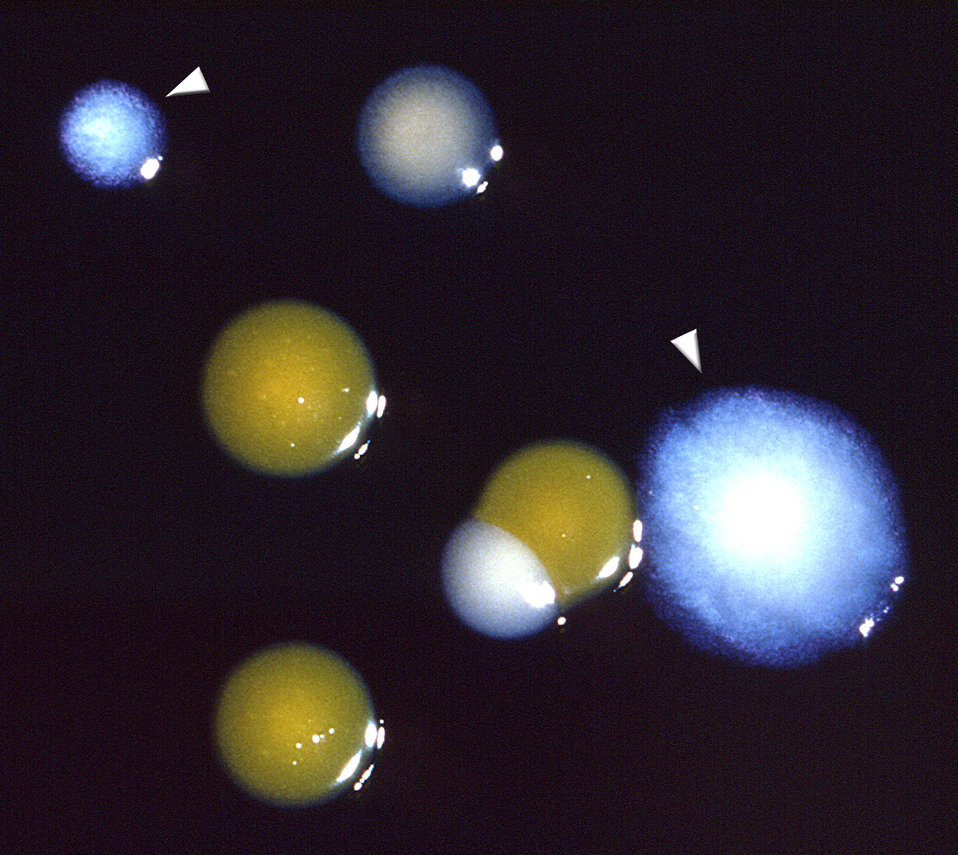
This image depicts two Legionella pneumophila bacterial colonies (arrowheads), amongst other bacterial colonies grown on BCYE (Buffered Charcoal Yeast Extract) agar, also known as 'Legionella agar'.